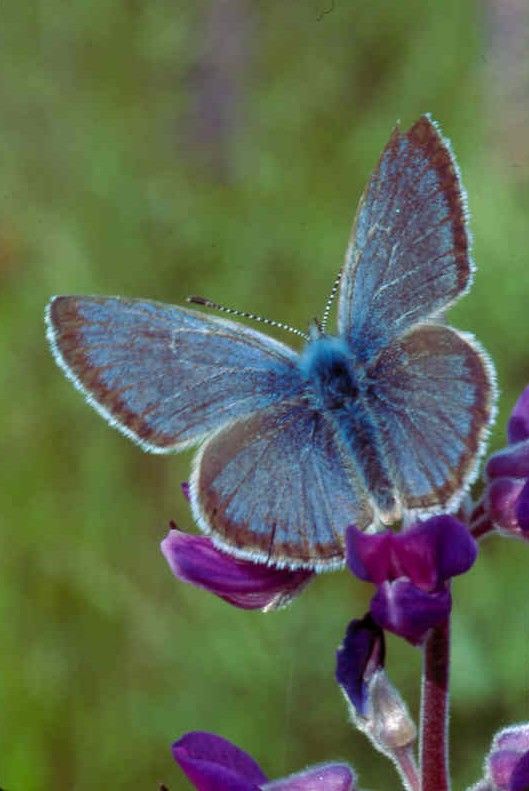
Willamette Valley Fender's Blue Butterfly